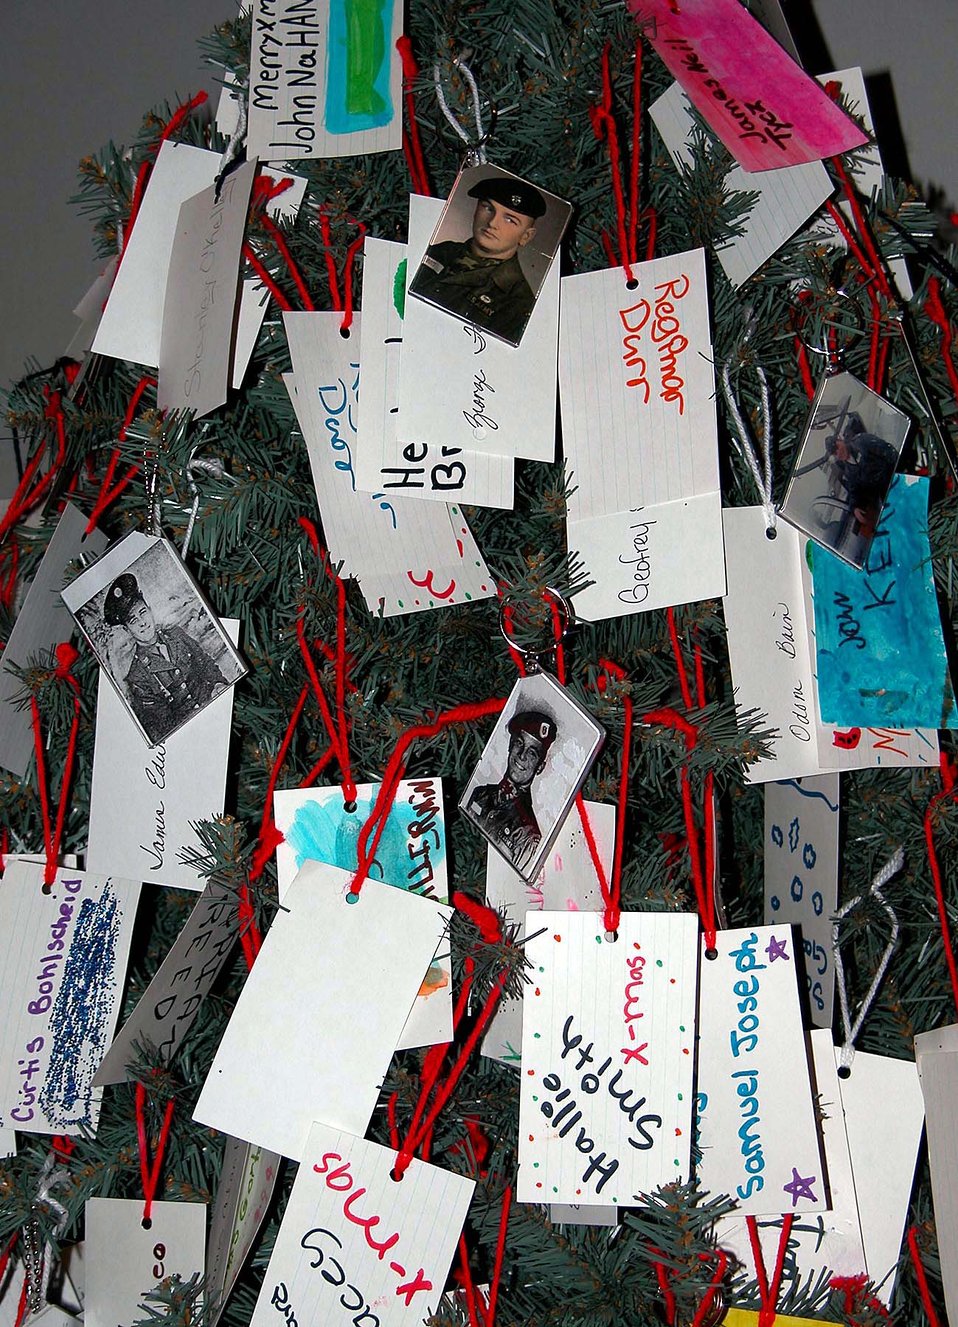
Lightless holiday tree honors missing

WASHINGTON -- This year's POW/MIA holiday tree includes pictures of about 10 missing servicemen. Retired Army Master Sgt. Peggy Marish-Boos started the POW/MIA holiday tree tradition in 1998.